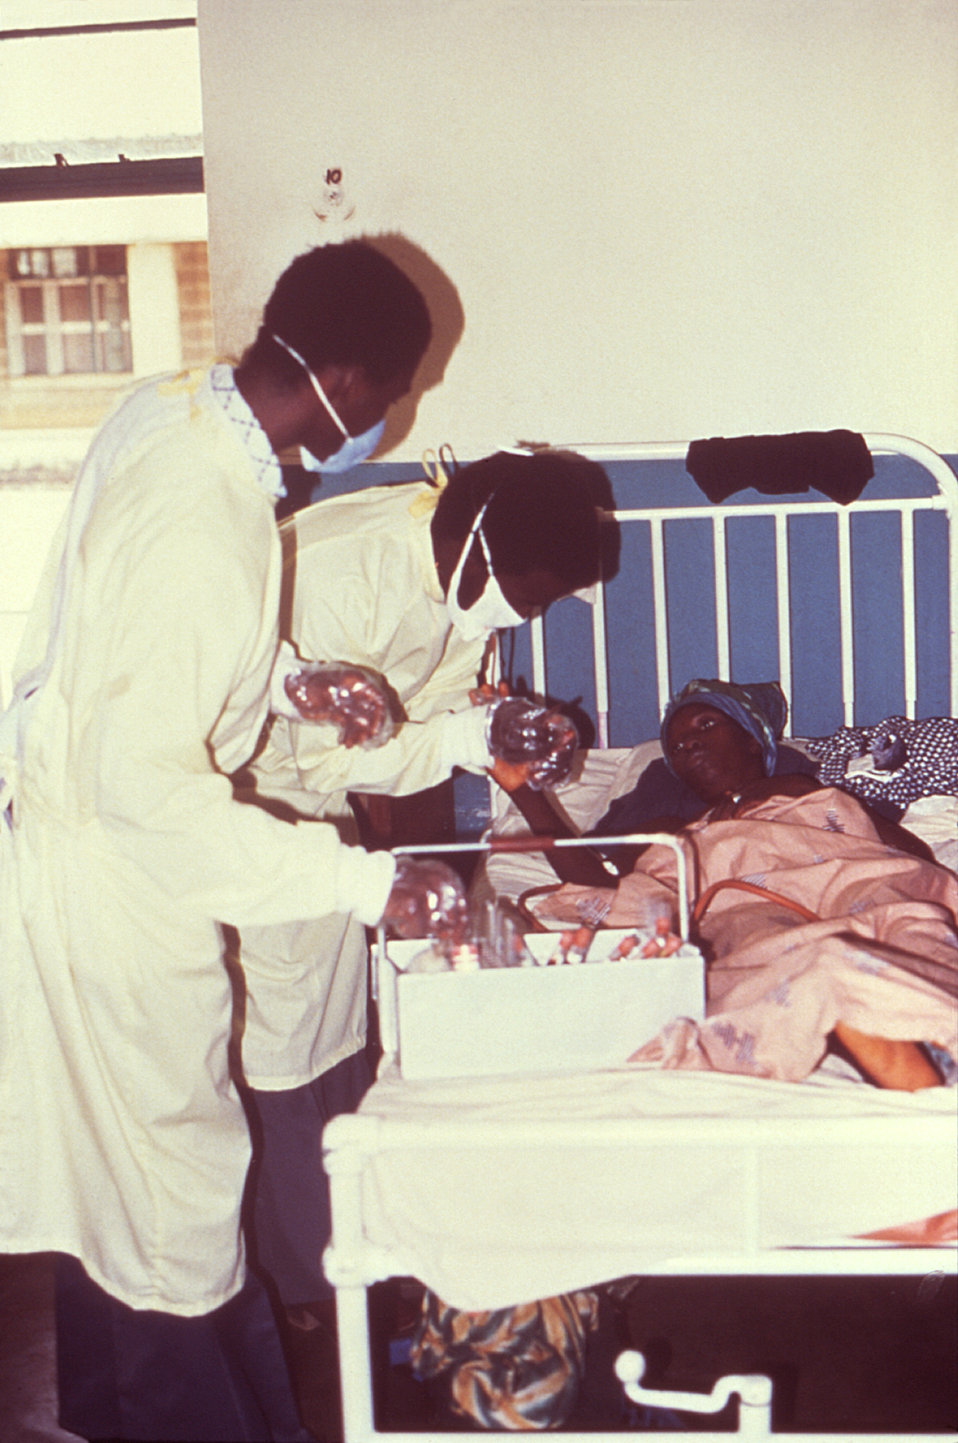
This image shows Vandy and Jusu administering treatment to a female Lassa fever patient in the Segbwema, Sierra Leone clinic.